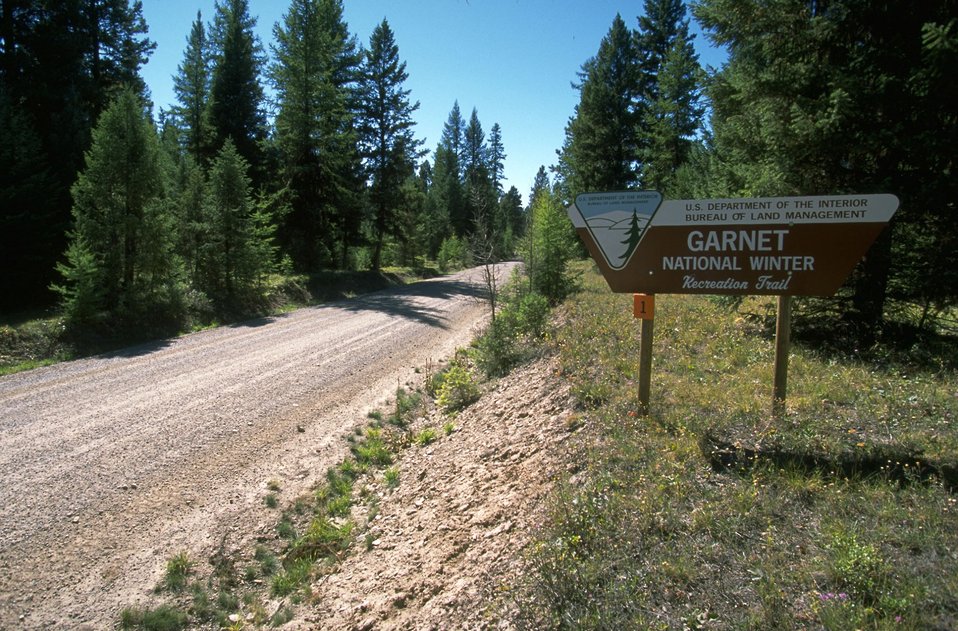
Garnet National Winter Recreation Trail sign